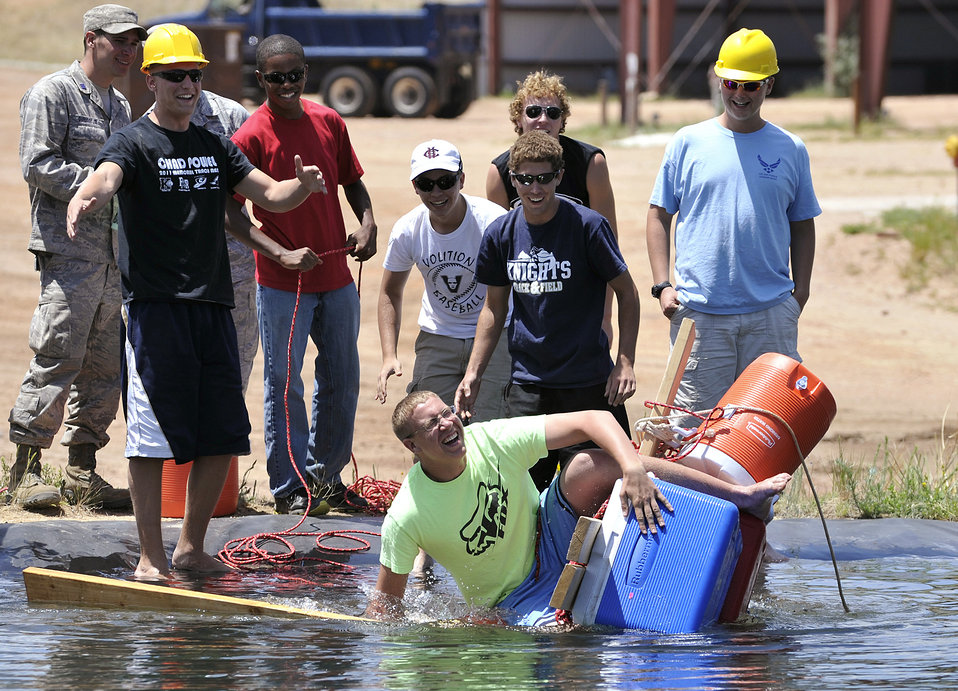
Engineering camp attracts, inspires students

Robert Lansing loses his balance on a makeshift raft as other members of his flight watch June 25, 2011, during a Society of American Military Engineers camp at the Air Force Academy.